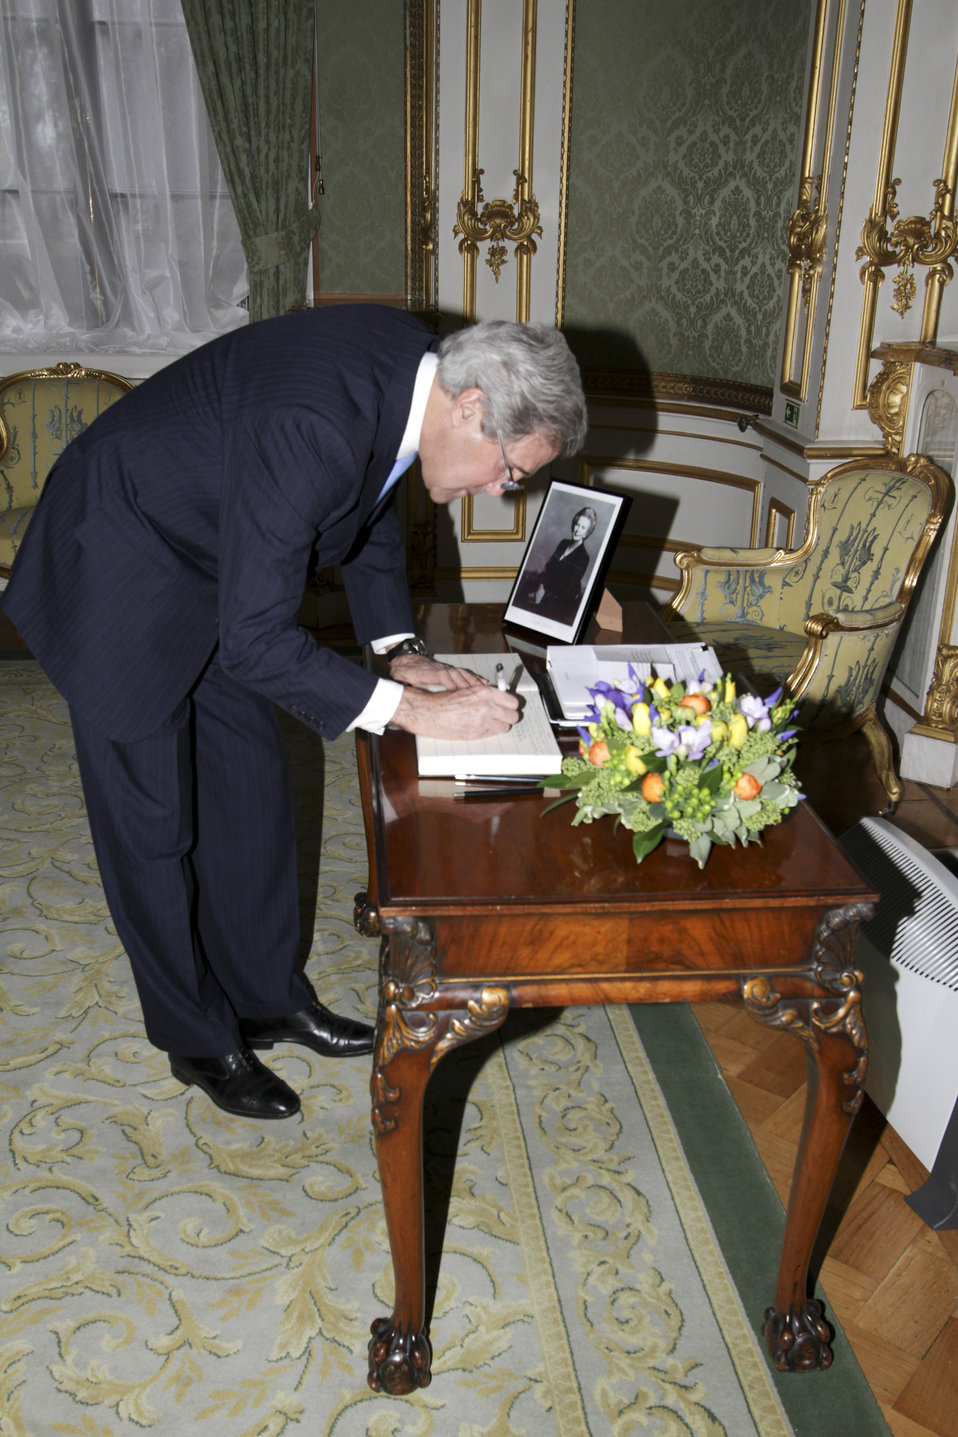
Secretary Kerry Signs Condolence Book for Former British Prime Minister Thatcher

U.S. Secretary of State John Kerry signs the condolence book for former British Prime Minister Margaret Thatcher in London, United Kingdom, April 11, 2013.